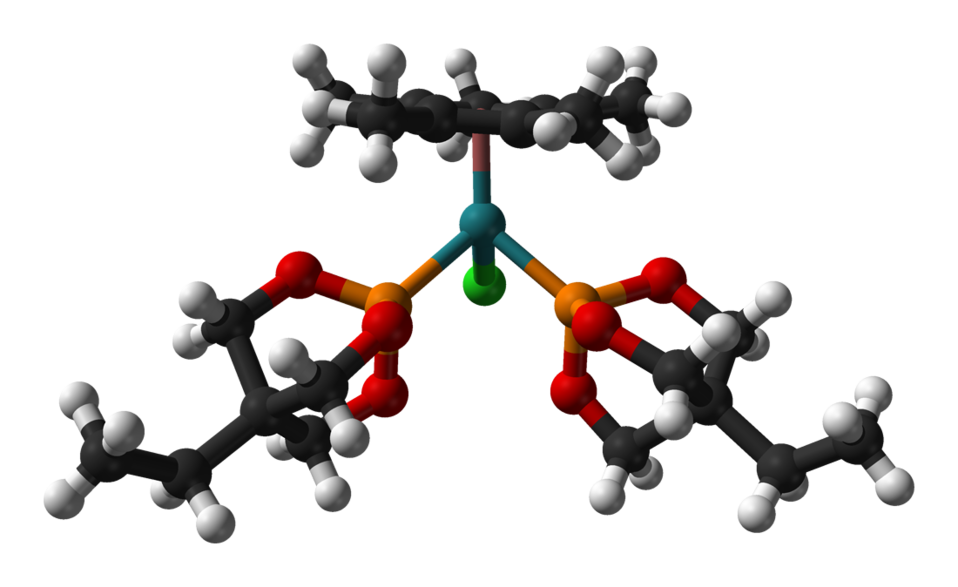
Ball-and-stick model of the caged phosphite complex (CpMe5)RuCl(EtCage)2 as found in the crystal structure. Colour code: Carbon, C: black Hydrogen, H: white Phosphorus, P: orange Oxygen, O: red Ruthenium, Ru: turquoise Chlorine, Cl: green Crystal structure by X-ray diffraction from Organometallics (1996) 15, 5209–5215. Model constructed in CrystalMaker 8.1. Image generated in Accelrys DS Visualizer.